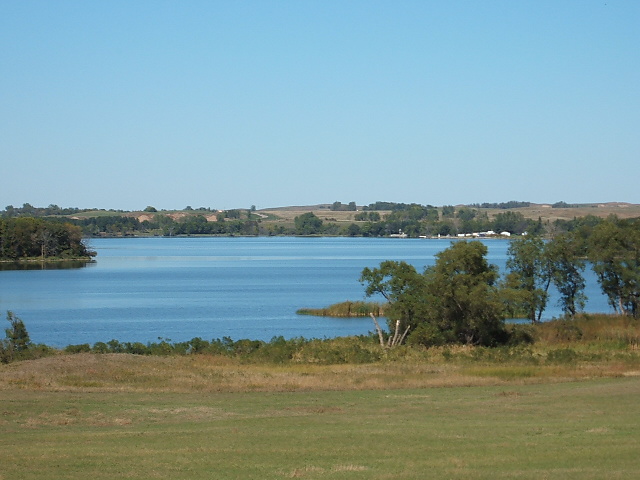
Uploaded by request of Sharla Abraham

Taken in South Dakota

Lake side view of South Bufalo in northeast South Dakota-protecting our lakes on our reservation.